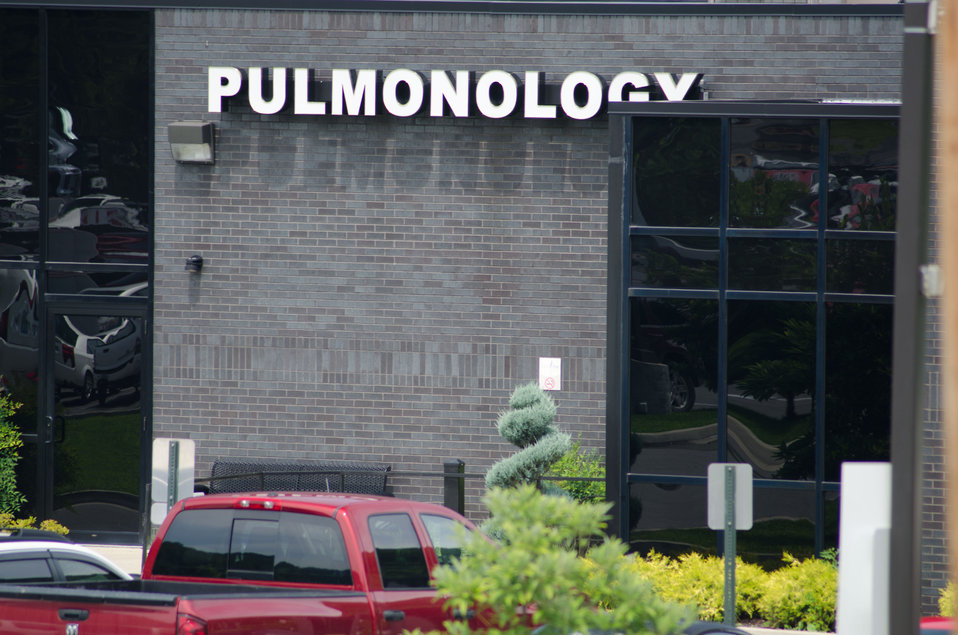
Detour, arrow, construction and temporary signs are posted on and across the re-utilized buildings and properties at various ends of multiple parking lots are common sights at the Pikeville Medical Center on Tuesday, July 12, 2011, in Pikeville, KY. Nearby, the above ground construction phase of Pikeville Medical Center (PMC) expansion project is underway, after months of infrastructure construction and rain delays. This is one of Kentucky’s largest American Recovery and Reinvestment Act (ARRA) projects. The $44.6 million Community Facilities Loan will finance construction of a new medical office building and parking garage.